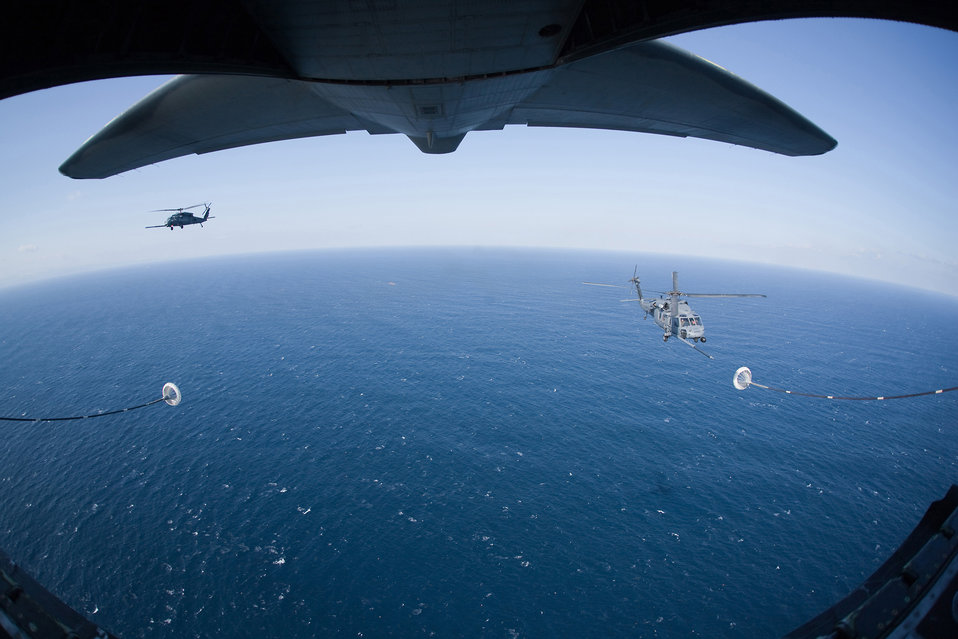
Flying gas station

An MC-130P Combat Shadow crew prepares to refuel two HH-60G Pave Hawk helicopters March 18, 2011, above the Pacific Ocean.